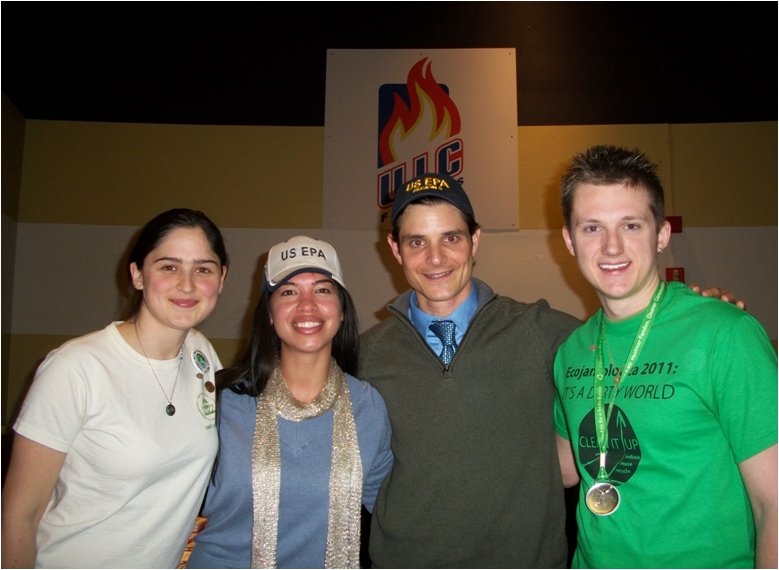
July, 2011 ecoAmbassadors and EPA team up at the University of Illinois, Chicago

At a campus Earth Day celebration, EPA staff joined up with ecoAmbassadors and provided remarks at the event.